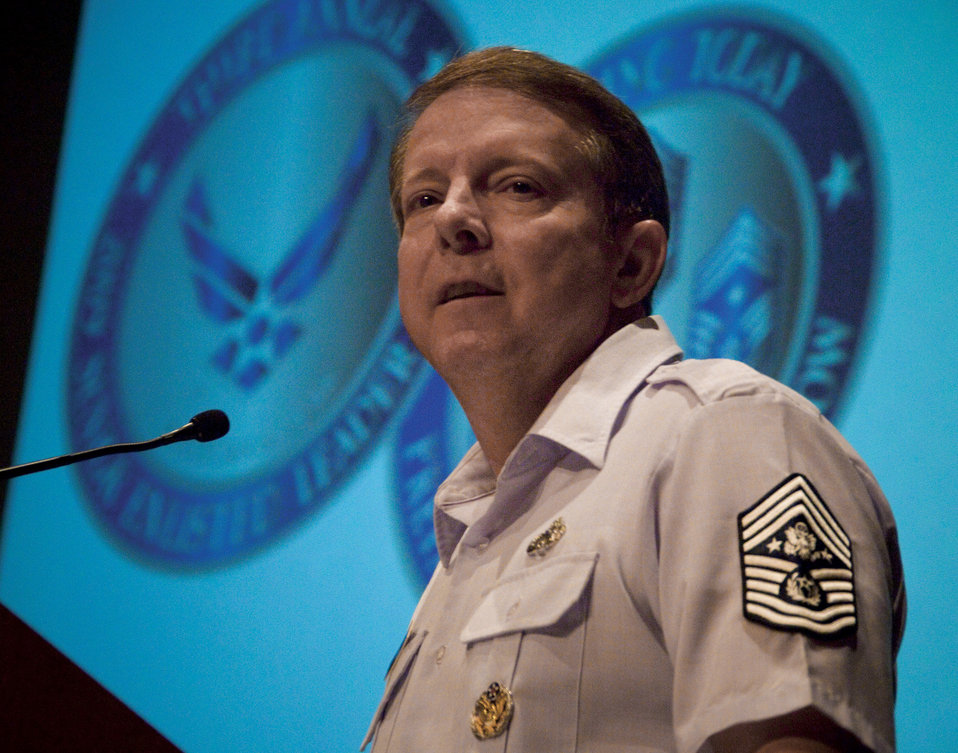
2009 Senior Enlisted Leader Summit held at Gunter

Chief Master Sgt. of the Air Force Rodney J. McKinley addresses attendees at the the third annual Senior Enlisted Leader Summit May 4 in the Senior NCO Academy Auditorium at Maxwell Air Force Base's Gunter Annex, Ala.